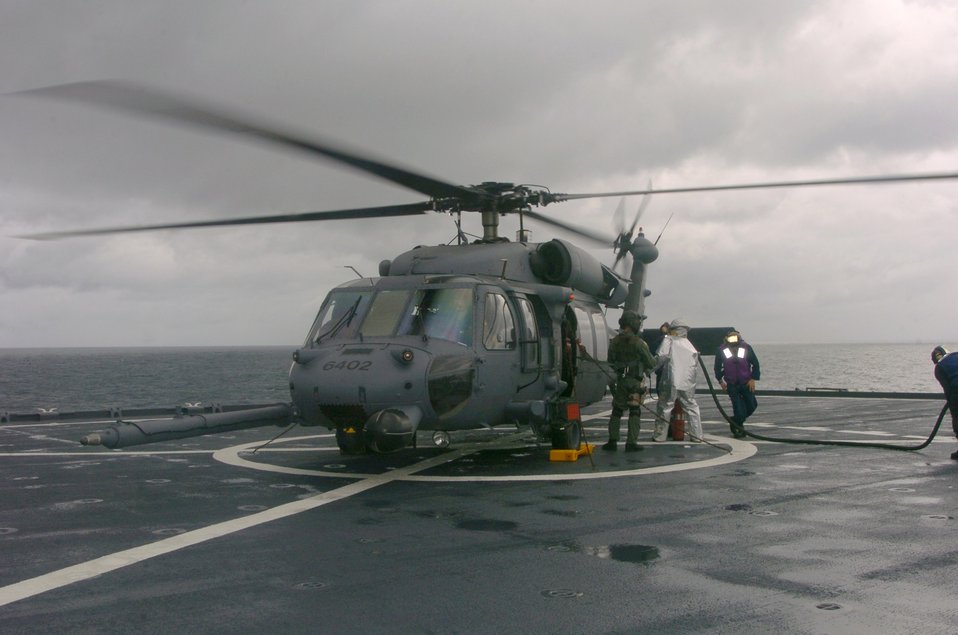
Mid-ship refueling

ABOARD USS FORT MCHENRY -- An Air Force HH-60 Pave Hawk helicopter receives fuel and accomplishes deck-landing qualification training at the same time. The helicopter had been providing typhoon relief in the Philippines and was returning home after the last supply run to the Quezon Province. The helicopter and its crew are assigned to the 33rd Rescue Squadron at Kadena Air Base, Japan.